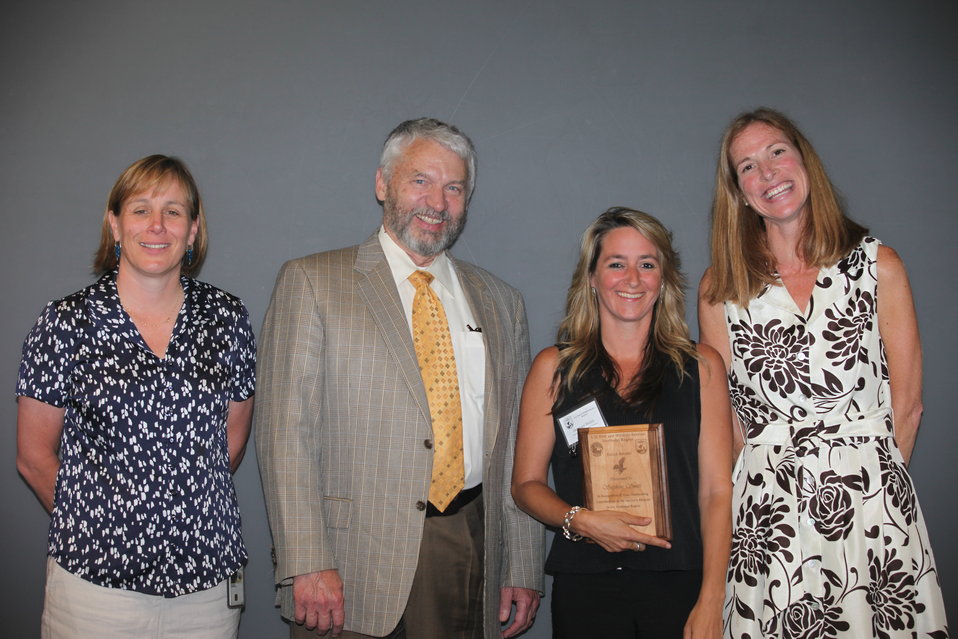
Stepheni Smith, Information Technology Management, recieved the Eagle Award.
From left to right: Deputy Regional Director Deb Rocque, Deputy Director Rowan Gould, Stepheni Smith, and Regional Director Wendi Weber